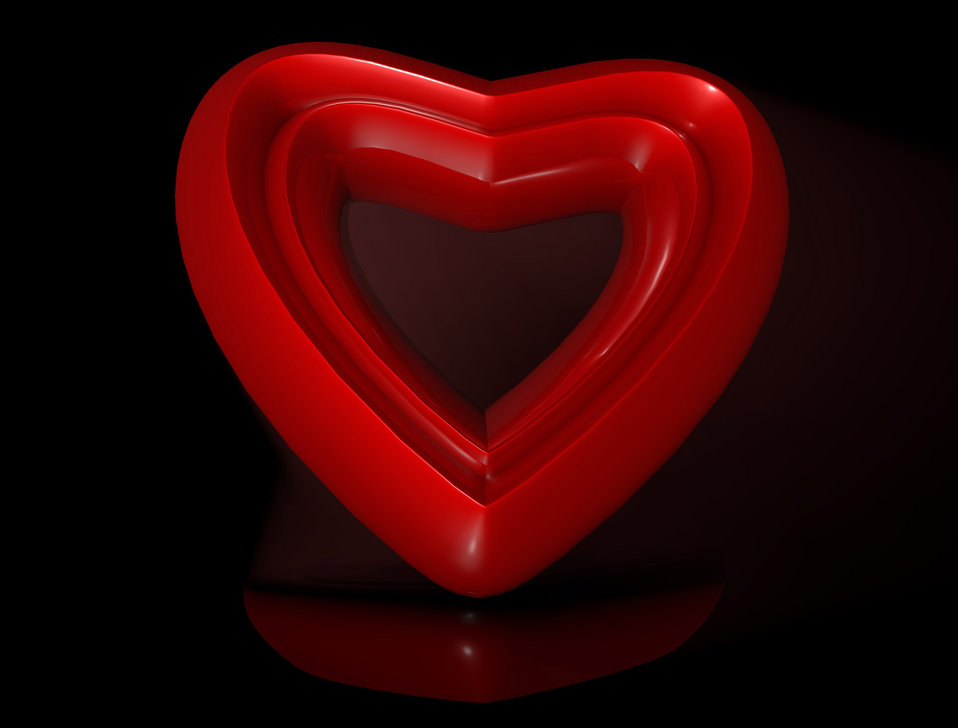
Illustration of heart

Glass heart with reflection.